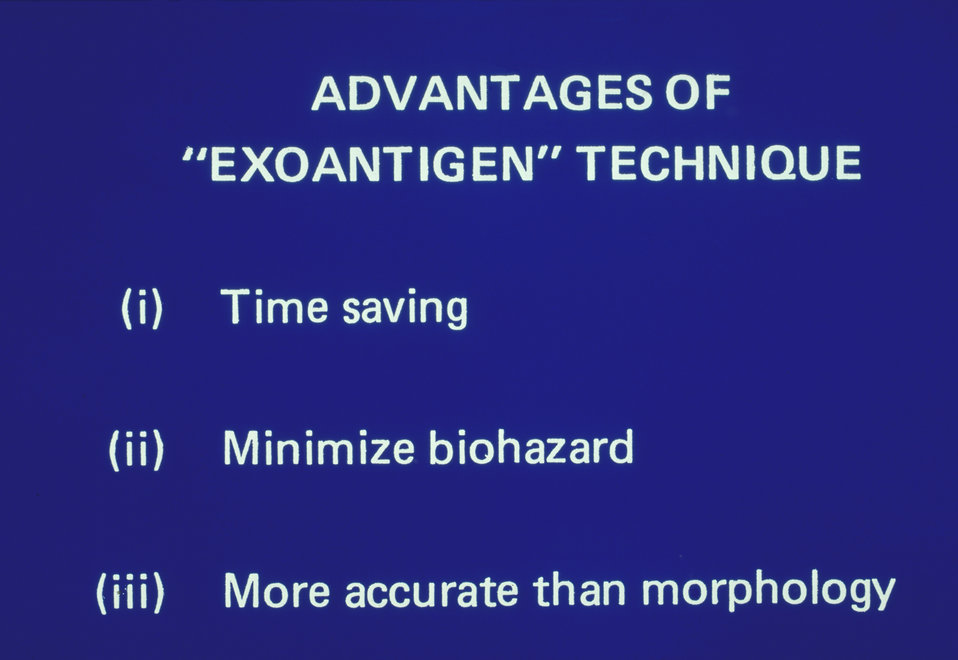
Advantages of "exoantigen" technique.